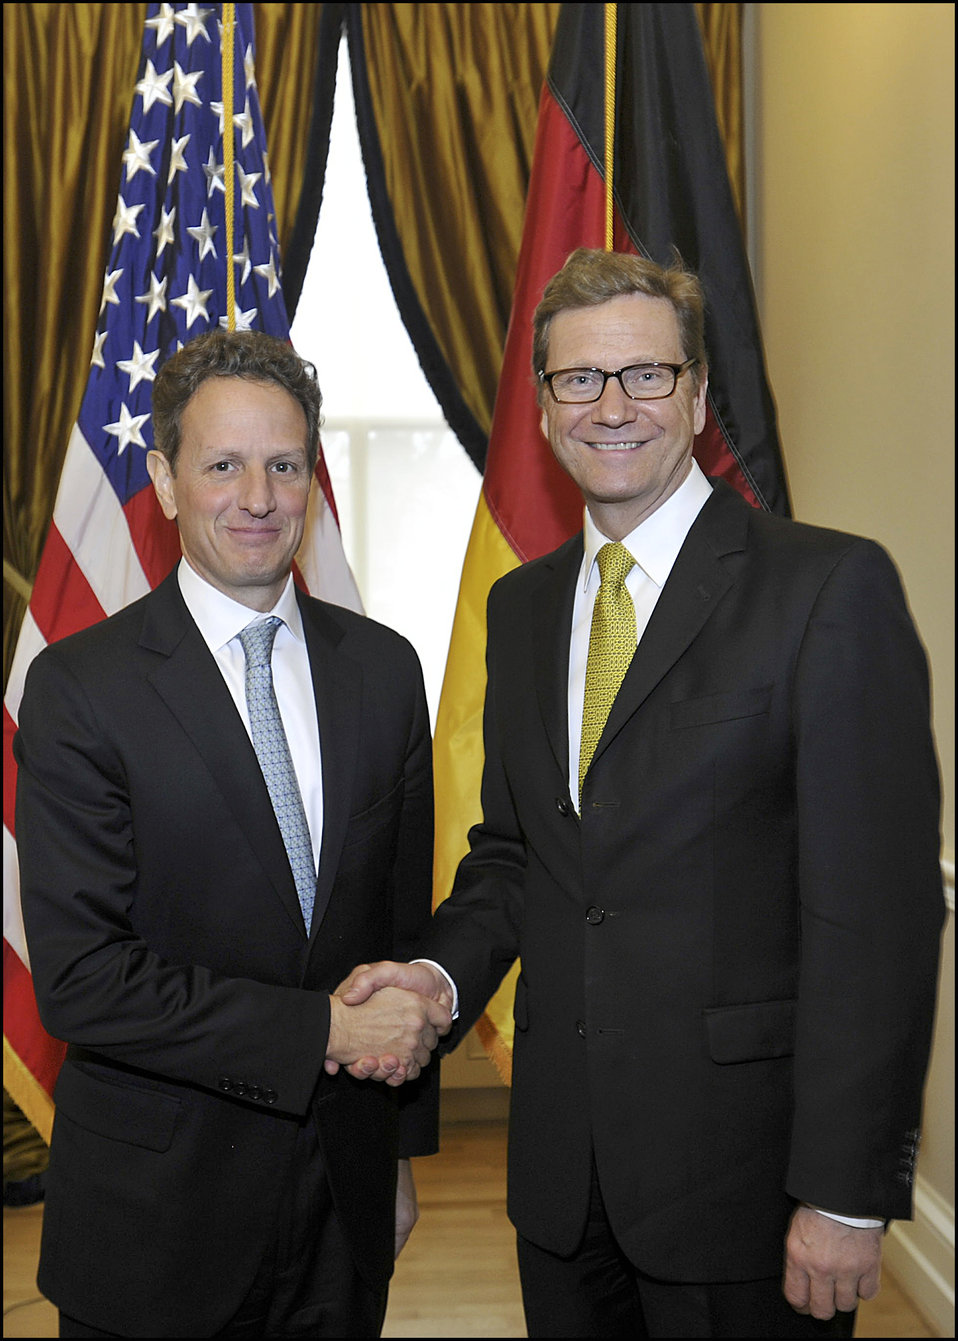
Secretary Geithner Meets with German Foreign Minister Guido Westerwelle

On January 20, 2012, Treasury Secretary Tim Geithner met with German Foreign Minister Guido Westerwelle at the Treasury Department.